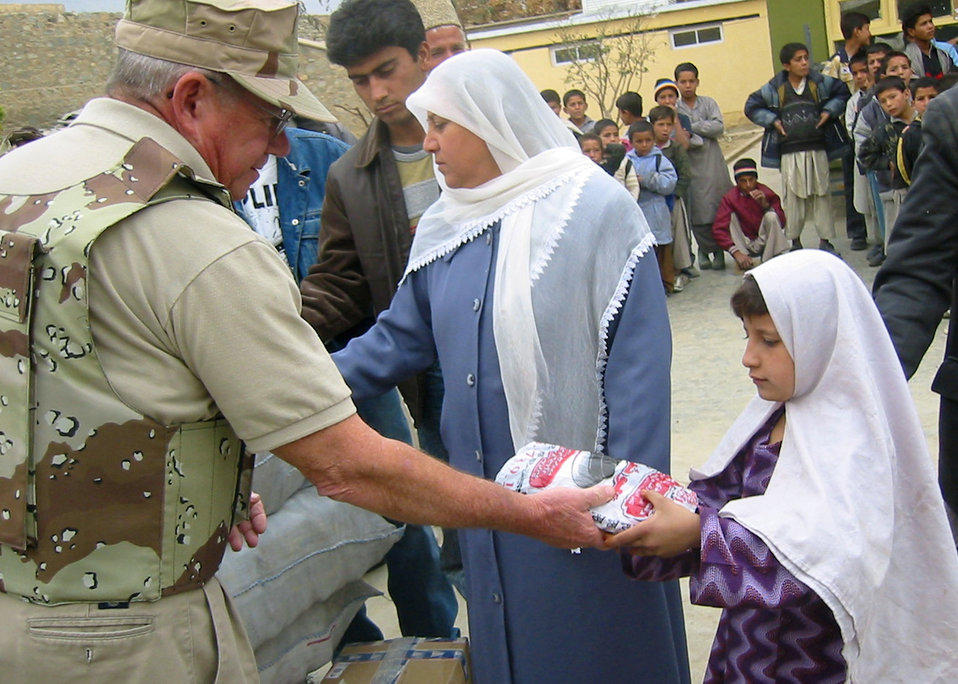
Flag-flying donations warm American hearts, Afghan feet

CHARIKAR, Afghanistan -- Barry McKelvy hands a bag of winter shoes to an Afghan child. He visited the village orphanage to help distribute $300 worth of shoes to the children residing in the youth shelter. Funds for the footwear were donations raised through the 455th Air Expeditionary Wing's flag-flying program at nearby Bagram Air Base. Mr. McKelvy is the coordinator of the program. He is also an airfield manager participating in the Air Force Contract Augmentation Program.